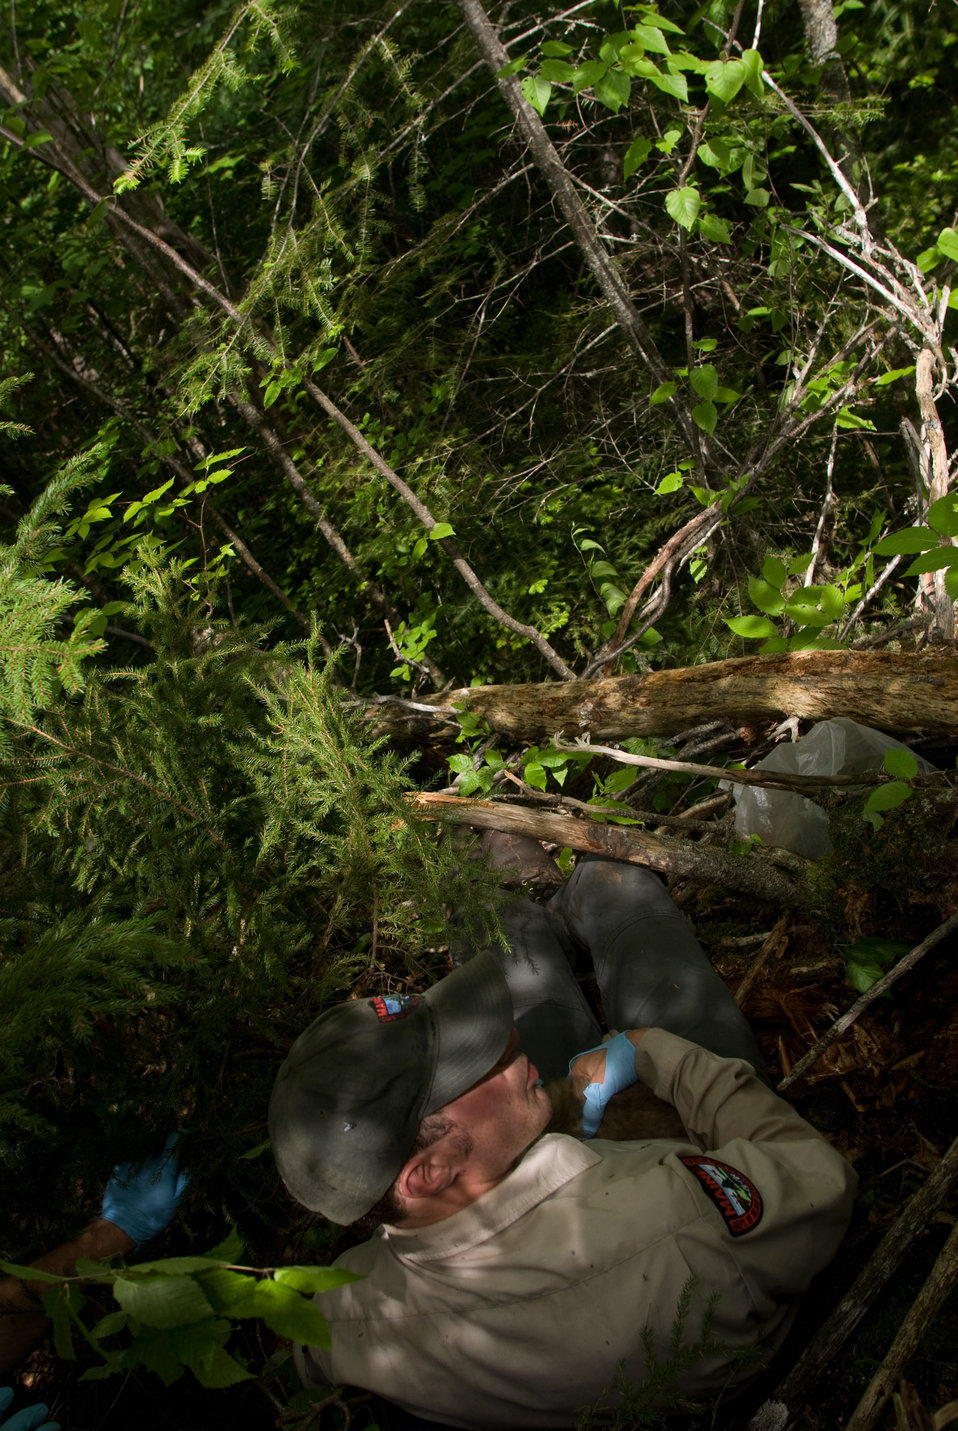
Thick habitat

Located on the edge of a steep incline, this lynx den was difficult to locate and operate around.